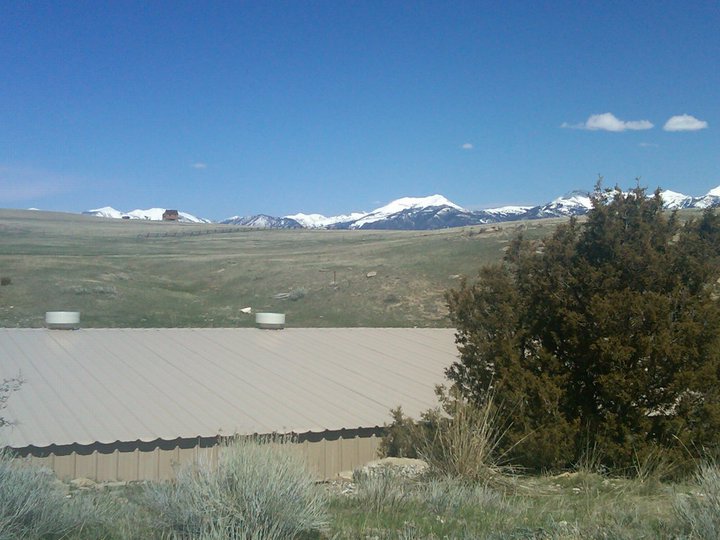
Ennis National Fish Hatchery

This building houses one of Ennis National Fish Hatchery's two springs that supply the water needed to run this broodstock facility.

Connie Keeler-Foster, project leader, and Sean Henderson showed us around this historic hatchery that produces millions of rainbow trout eggs annually for research facilities, universities, and other hatcheries in 23 different states. Established back in the 1930's, this level of production supports recreational fisheries across the country, and equates to about 5 million 'angler days' and $50 million per year in economic return. Not to mention they won the coveted 'Hatchery of the Year' Award last year for their efforts in converting to solar power!